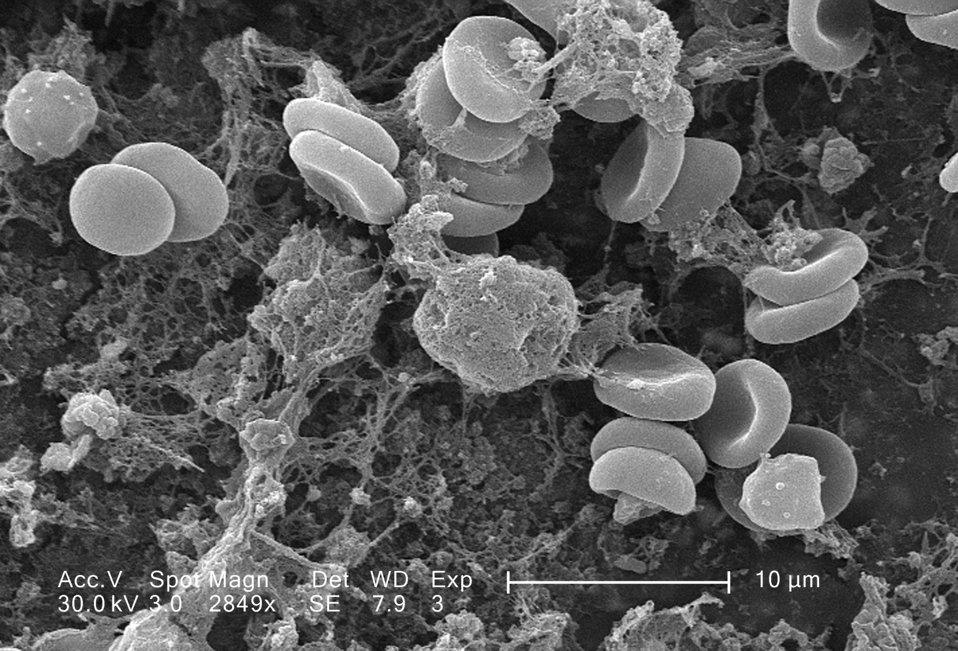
This scanning electron micrograph (SEM) depicted a number of red blood cells found enmeshed in a fibrinous matrix on the luminal surface of an indwelling vascular catheter; Magnified 2849x. In this instance, the indwelling catheter was a tube that was left in place creating a patent portal directly into a blood vessel. Some of the erythrocytes are grouped in stacks known as a 'Rouleaux formation'.